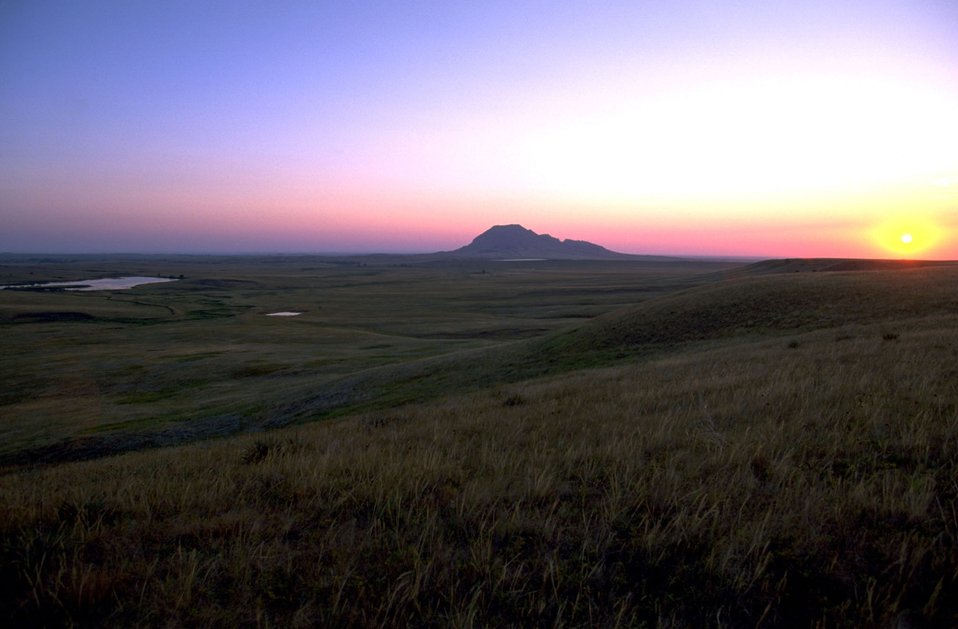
Sunrise at Bear Butte